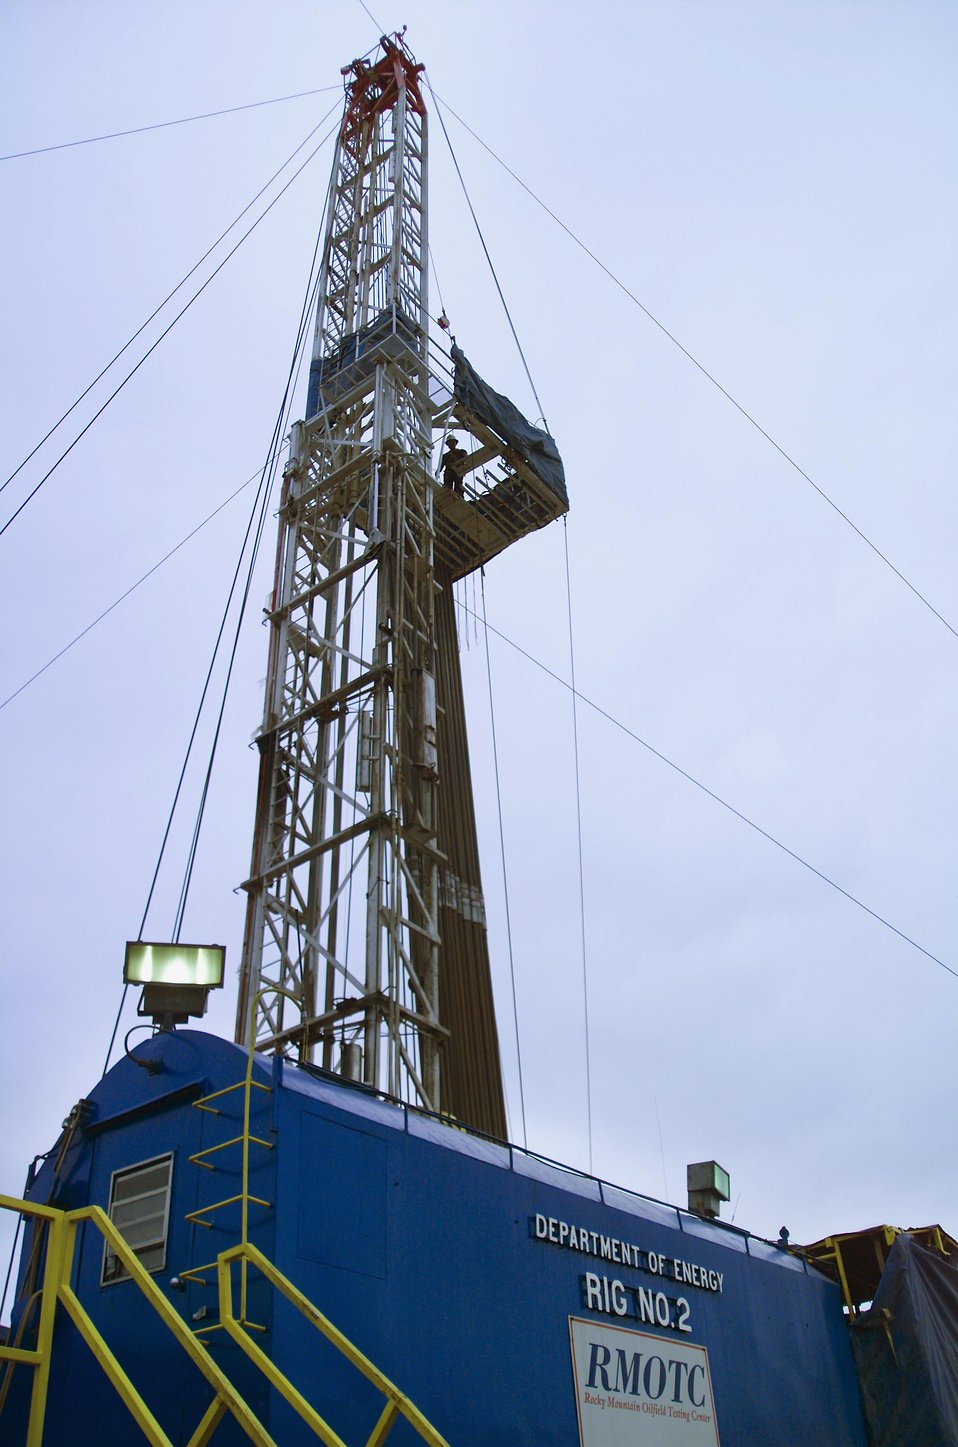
One of the RMOTC drilling rigs at Naval Petroleum Reserve No.3 (NPR-3) near Casper, Wyoming.

The Rocky Mountain Oilfield Testing Center (RMOTC) is a Department of Energy field test site for emerging and developing technologies to address critical energy issues. The field test site, located on Naval Petroleum Reserve No.3 (NPR-3), is a 10,000-acre site. There are approximately 700 well bores with 600 producing wells ranging in depth from 500 to 5,000 feet.